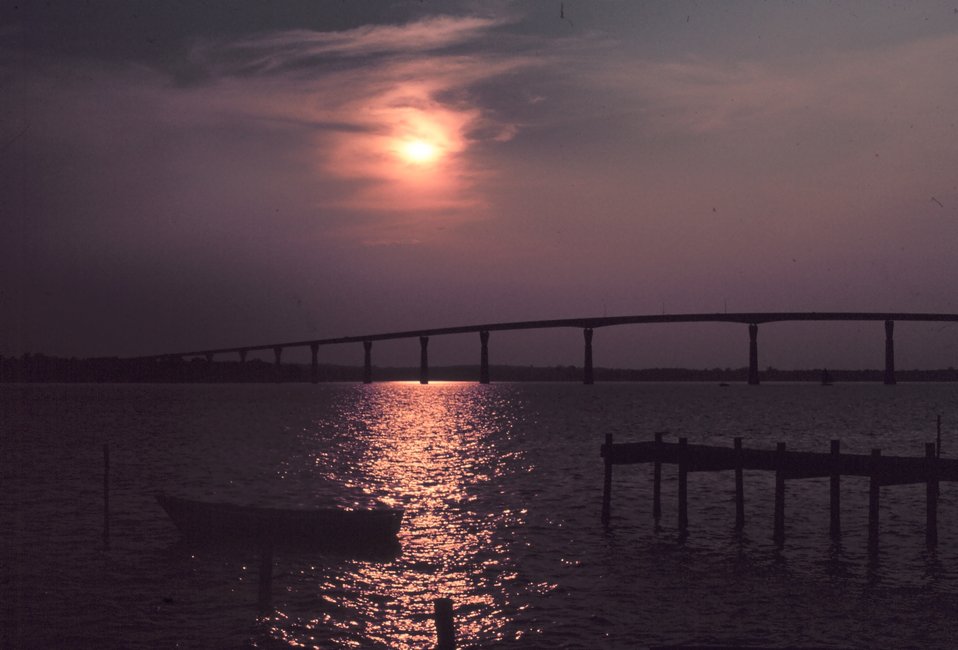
Sunset over the Thomas Johnson Bridge joining Calvert and St. Mary's Counties Maryland.